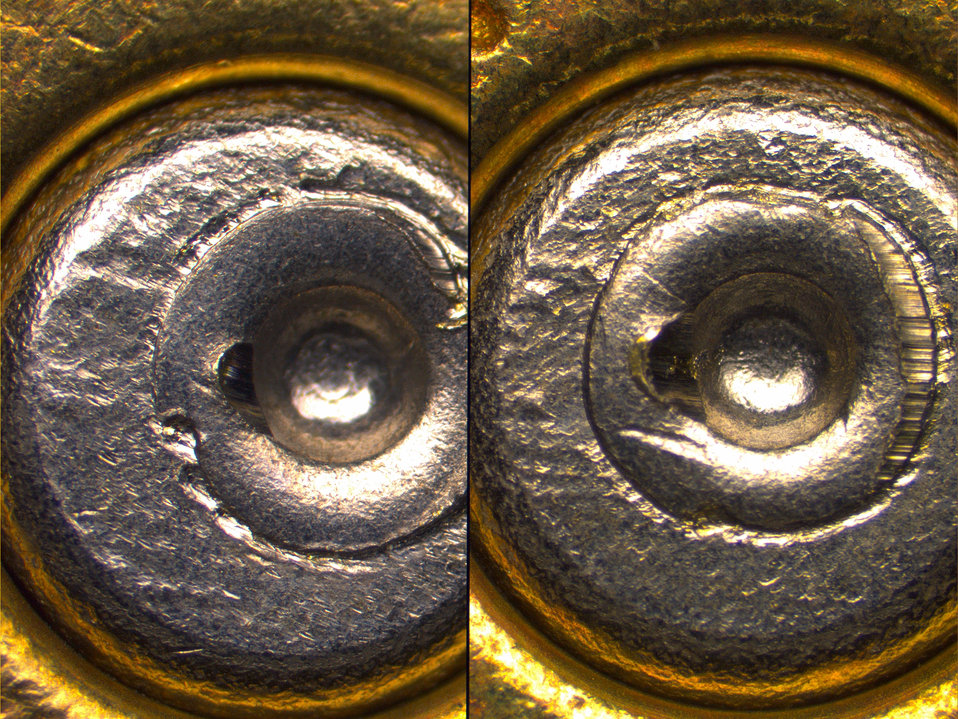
Cartridge Cases

The right and left images compare two cartridge cases fired from pistols manufactured consecutively at the same factory. Forensic examiners compare images such as these in order to determine whether a specific weapon can be matched to a bullet or casing found at a crime scene.

Consecutively manufactured weapons create similar patterns on a cartridge case. Researchers use them to develop measurement standards that help forensic examiners identify matching cartridge cases with certainty. NIST standard cartridge cases allow examiners to rule out the possibility that an apparent match was fired by a weapon made on the same assembly line.